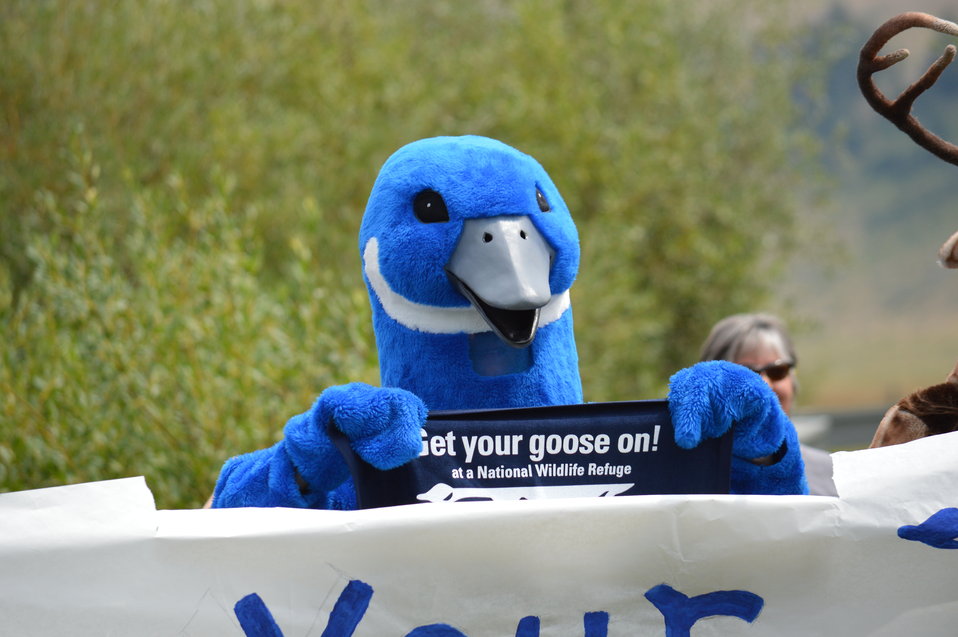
Get Your Goose On! - National Elk Refuge Style

On August 10, 2012 the U.S. Fish and Wildlife Service and Partners celebrated the 100 year anniversary of the establishment of the National Elk Refuge. In these photos, young attendees, along with Puddles the Blue Goose and the National Elk Refuge's mascot, showed us how to Get Your Goose On! with style.